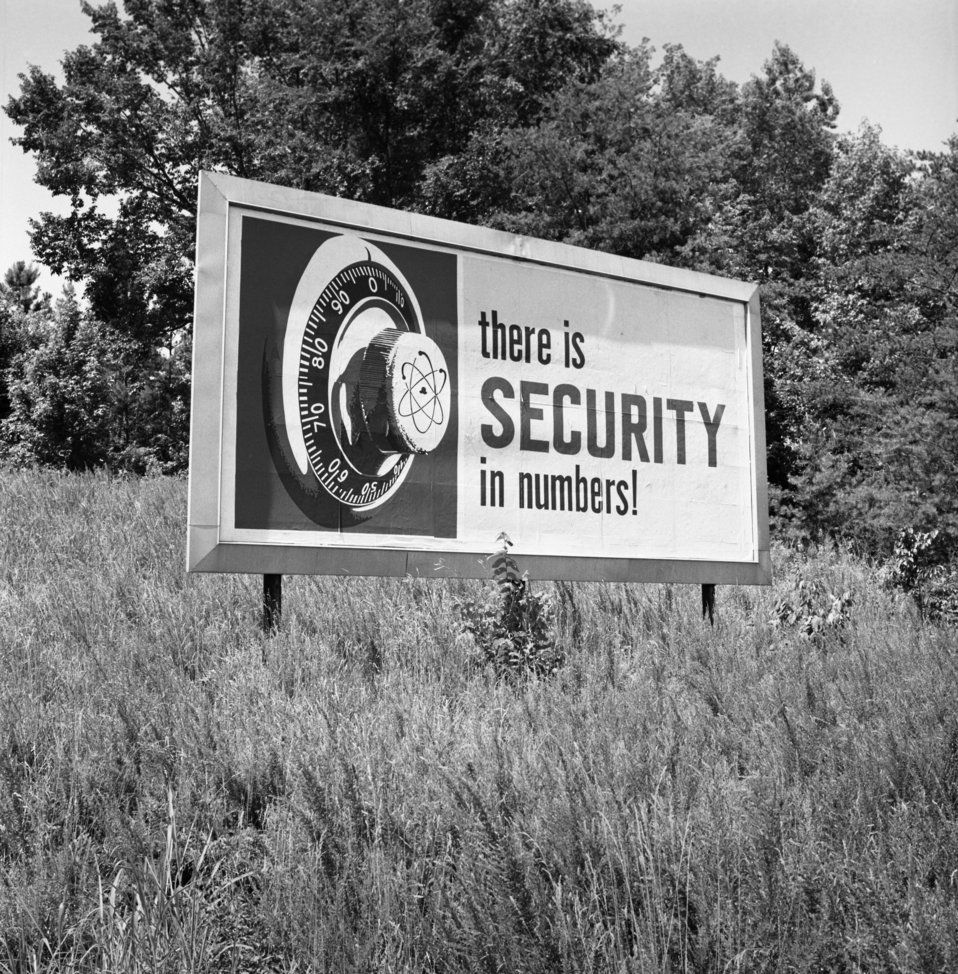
Security Billboard Oak Ridge 1967

67-0203 DOE photo Frank Hoffman 7-3-1967 Oak Ridge Tennessee